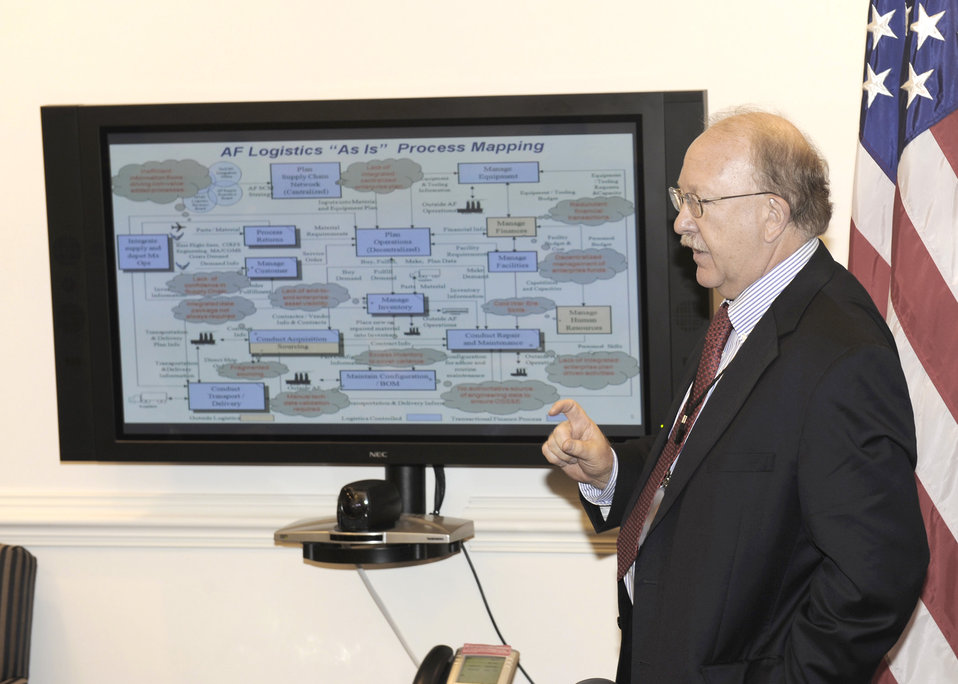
ECSS

Grover Dunn, the Air Force director of transformation, briefs the implementation of the Expeditionary Combat Support System to a group of senior Air Force leaders at the Pentagon Oct. 22, 2010. ECSS is an Air Force Logistics transformation that will provide integrated software, standardized business processes, and transformed personnel roles.